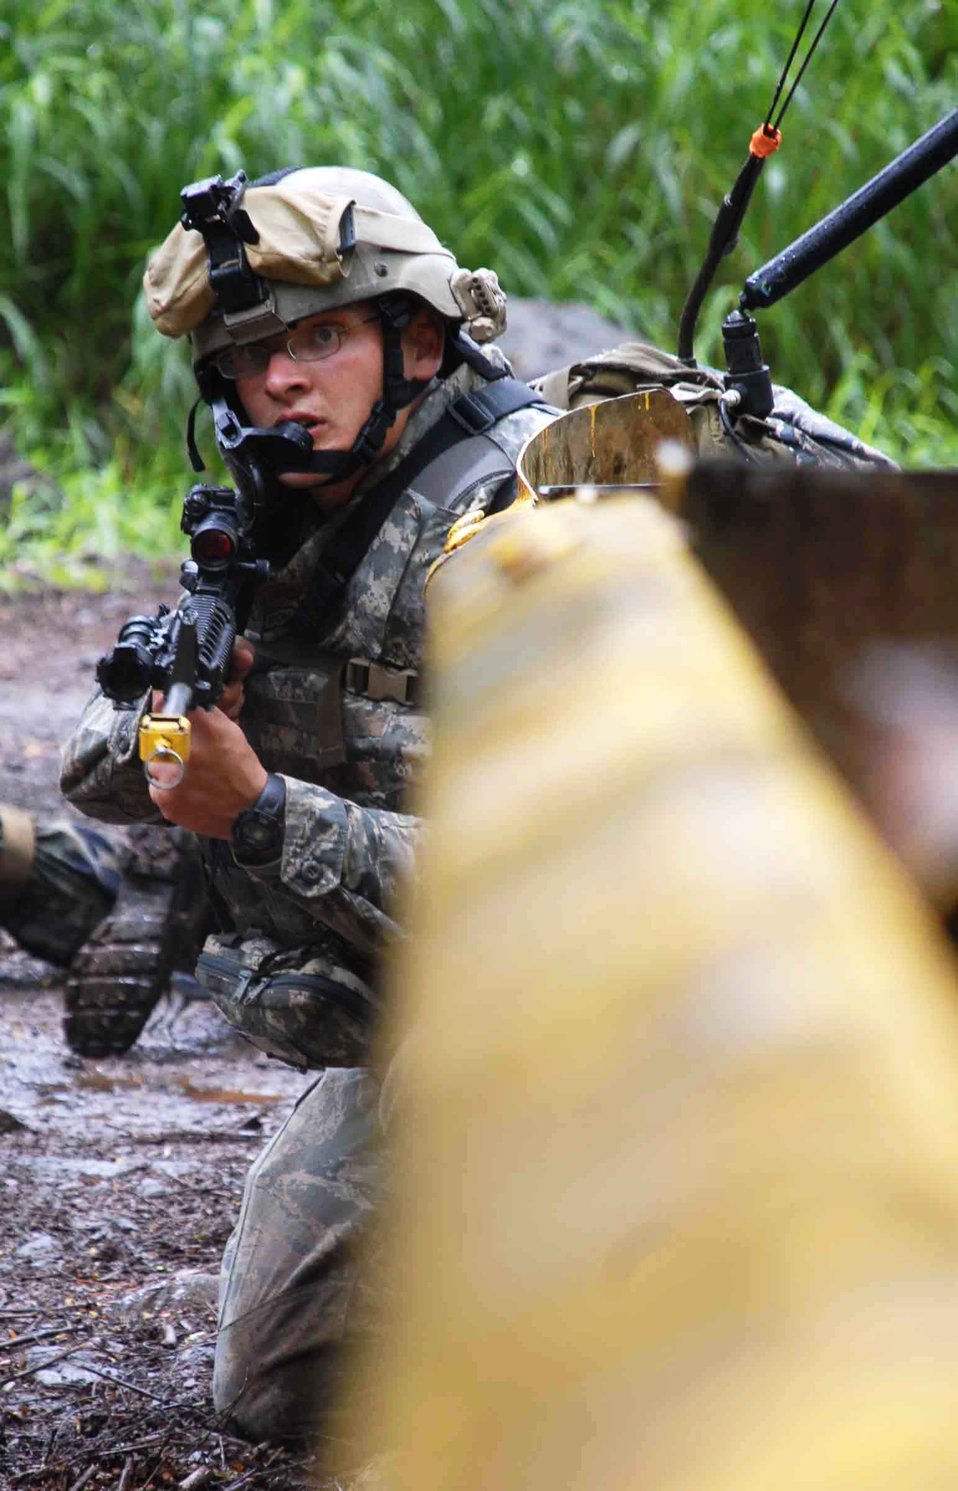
Airmen train with Army to become JTACs

Airman 1st Class Chris Tamblyn, 25th Air Support Operations Squadron Tactical Air Control Party, provides small-arms fire cover for members of his unit who were evading opposing forces during a field training exercise here June 23. Armed with M-16s and basic radio and global positioning system equipment, they made their way through wet brush to find their camping spot and were